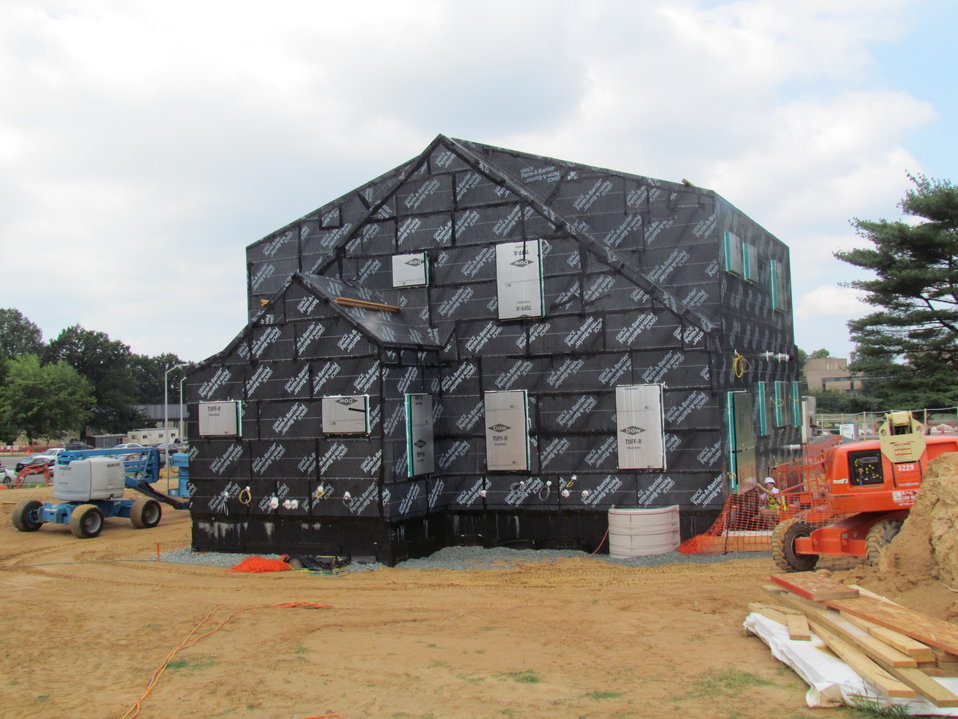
Net-Zero Energy Residential Test Facility - Construction photo showing the east and north sides of the facility just prior to air leakage test.